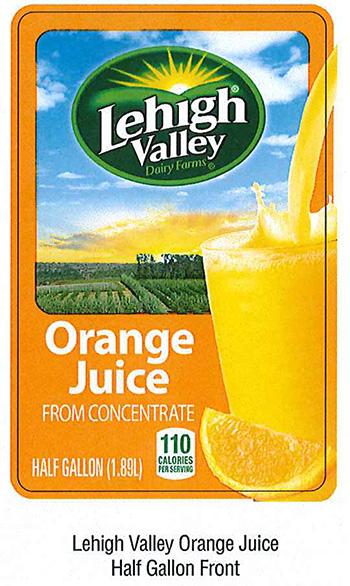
RECALLED – Orange Juice

March 3, 2014 – Product Recall – Lehigh Valley Dairy Conducts Voluntary Recall of Lehigh Valley, Swiss Premium, and Price Chopper Brand Orange Juice Because It May Contain Undeclared Allergen (Milk).